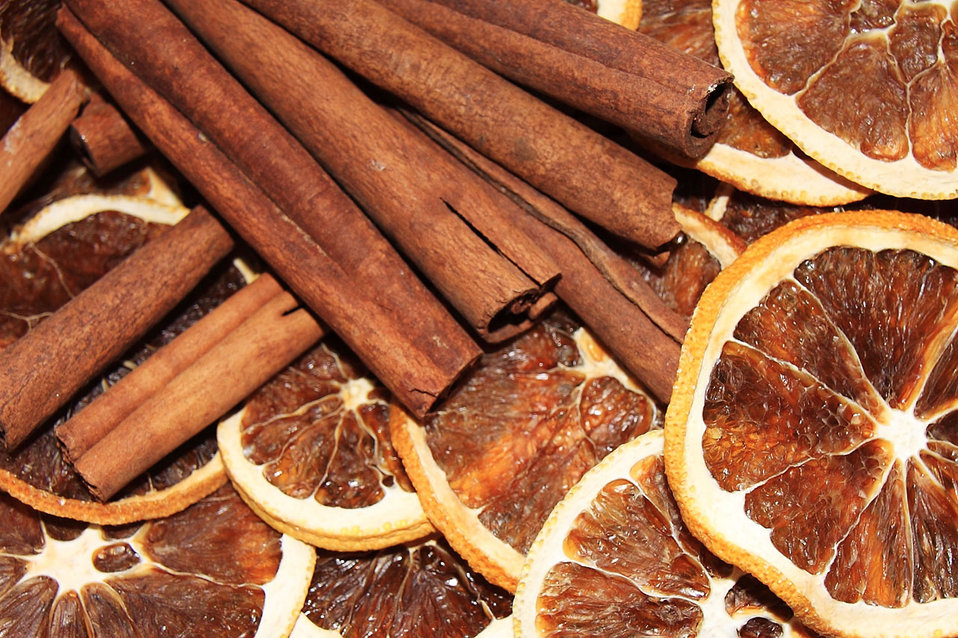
Cinnamon and orange

Cinnamon sticks with dried orange slices.